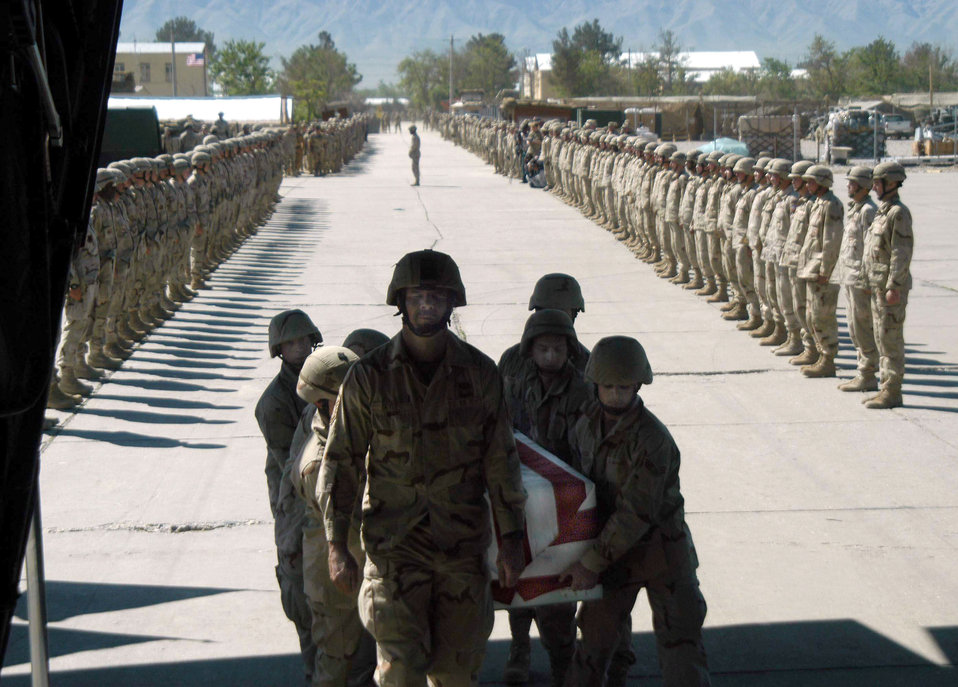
A solemn path

OPERATION ENDURING FREEDOM (AFPN) -- Master Sgt. Jerry Deyoe of the 682nd Air Support Operations Squadron leads a group of airmen carrying flag-draped transfer case to a C-130 Hercules at Bagram Air Base, Afghanistan, on April 26. Airman 1st Class Raymond Losano was killed April 25 during a firefight in Afghanistan near the Pakistan border. Losano, 24, was a tactical air command and control specialist assigned to the 14th ASOS at Pope Air Force Base, N.C.